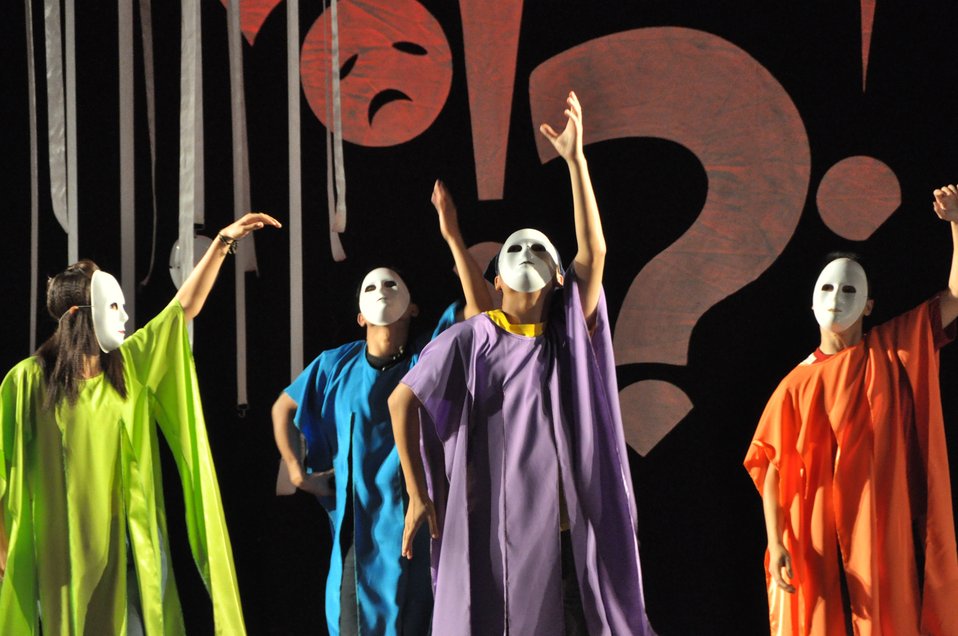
PEPFAR Musical Questions and Exclamations

Hanoi, May 17, 2013